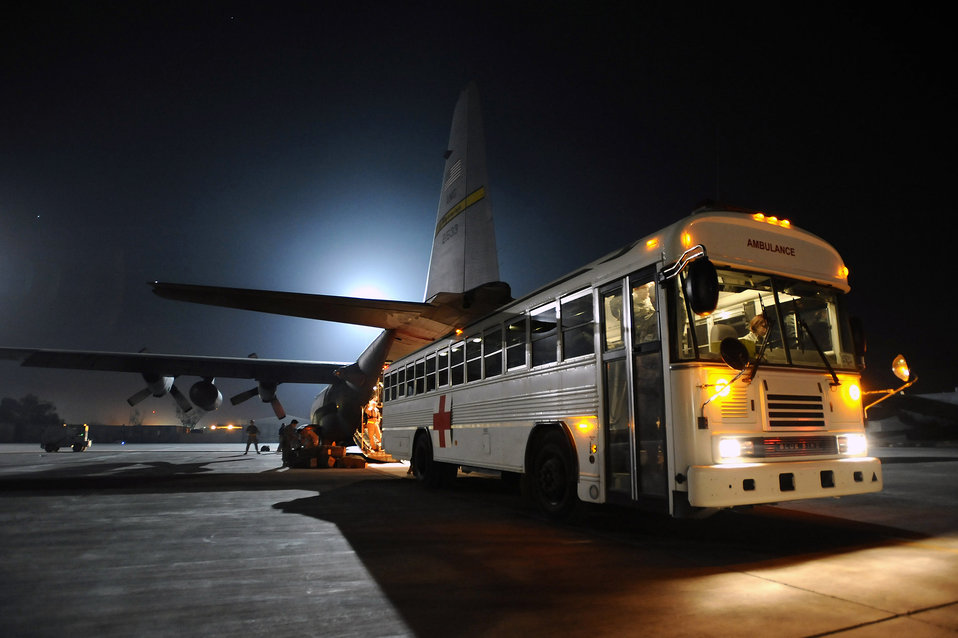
Iraqi doctors study American aeromedical evacuation program

A bus from the Contingency Aeromedical Staging Facility at Joint Base Balad, Iraq, prepares to offload ambulatory and litter-bound patients from a C-130 Hercules Nov. 8. Two Iraqi doctors from Iraq's Ministry of Defense accompanied a Air Force aeromedical evacuation mission to study aeromedical evacuation procedures so that they can establish an aeromedical evacuation service for the Iraqi air force.